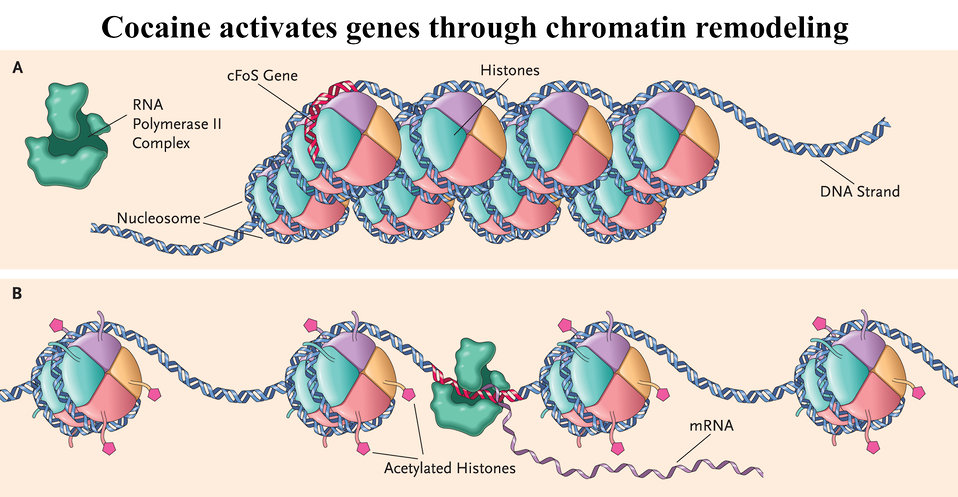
Cocaine activates Genes through chromatin remodeling